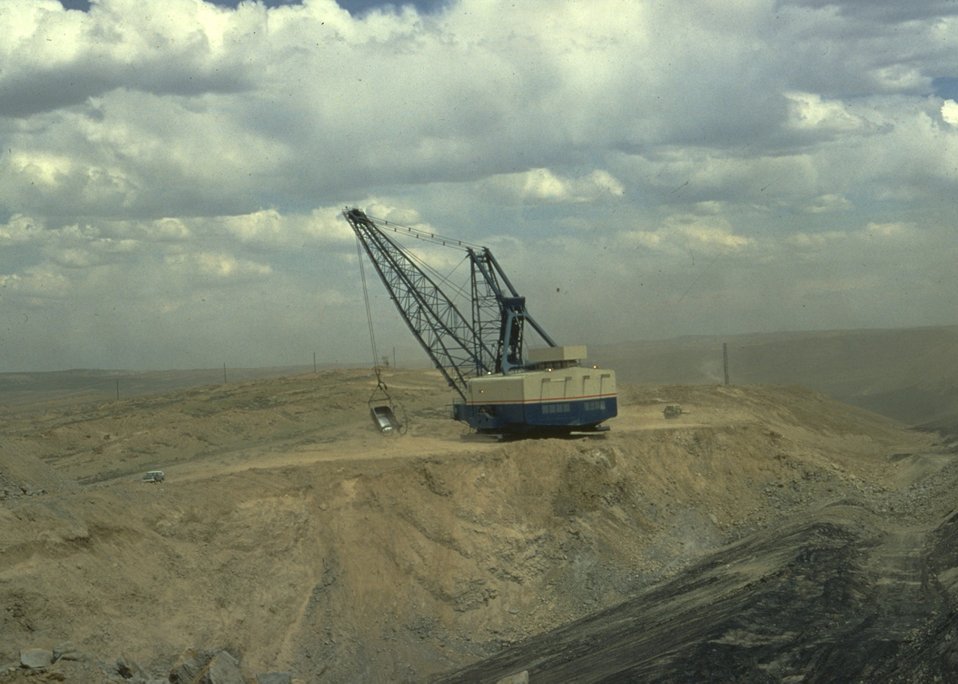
Coal bed methane development.